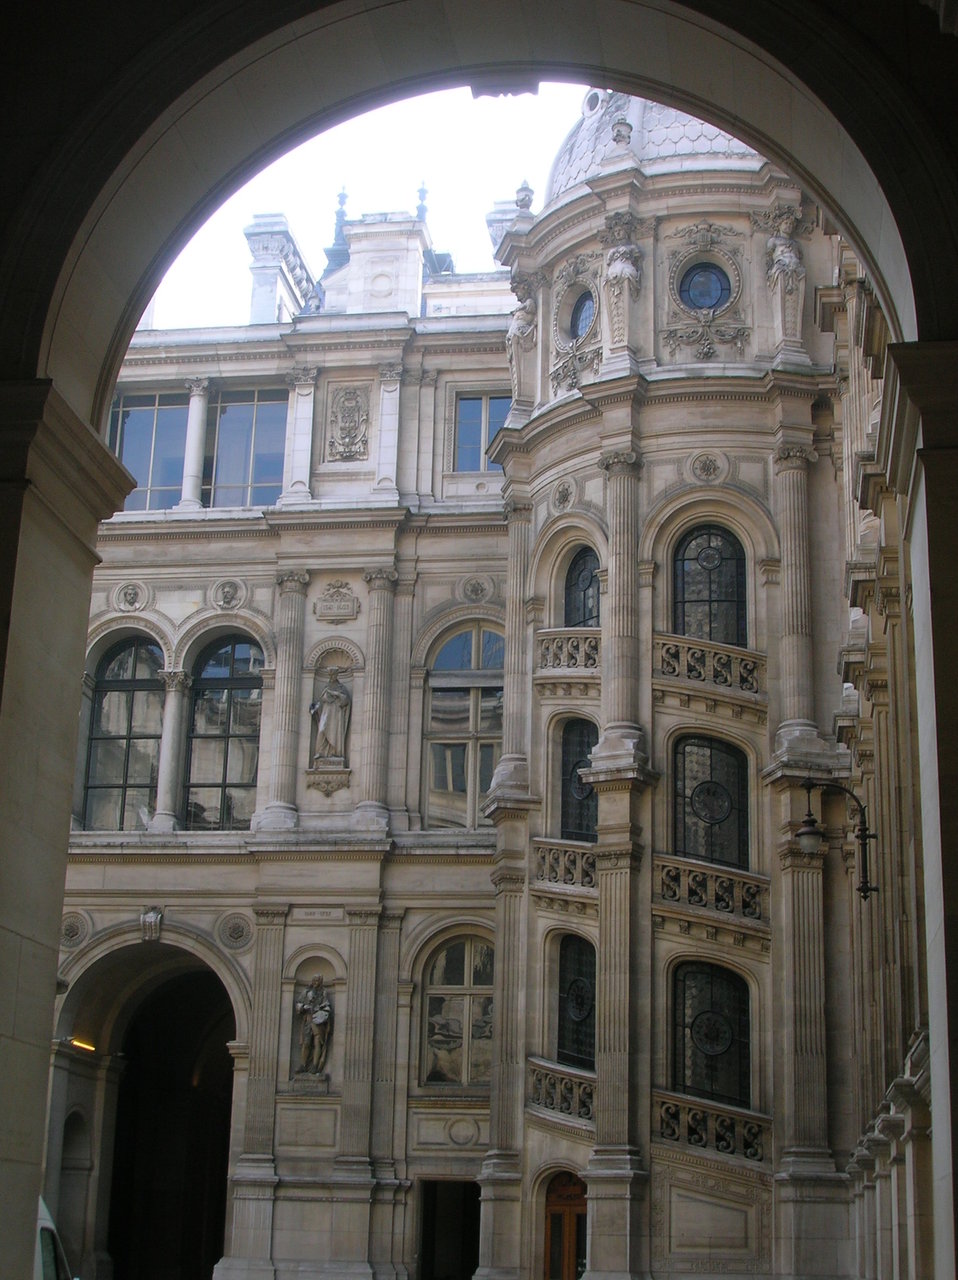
Yard of the H√¥tel de Ville of Paris.
Fran√ßais†: Cour int√©rieure de l'H√¥tel de ville de Paris.